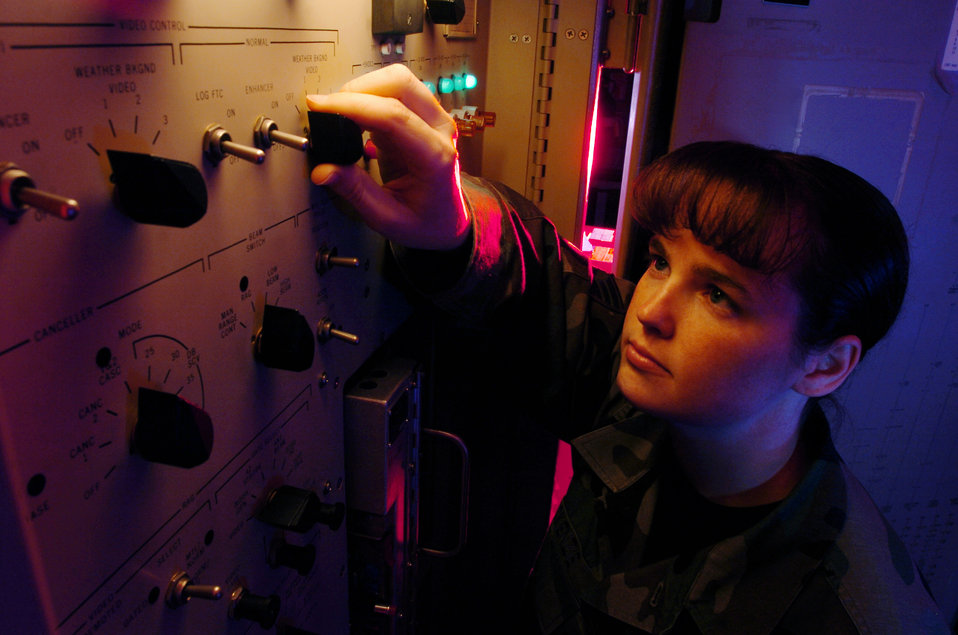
Yokota radar techs keep Pacific aircraft safe

YOKOTA AIR BASE, Japan -- Staff Sgt. Kelly McKenzie sets up processor equipment for the airport surveillance radar during a preventive maintenance inspection here. Radar technicians install, maintain, overhaul and repair ground aircraft control and warning systems used to guide incoming and outgoing aircraft here. She is assigned to the 374th Communications Squadron.